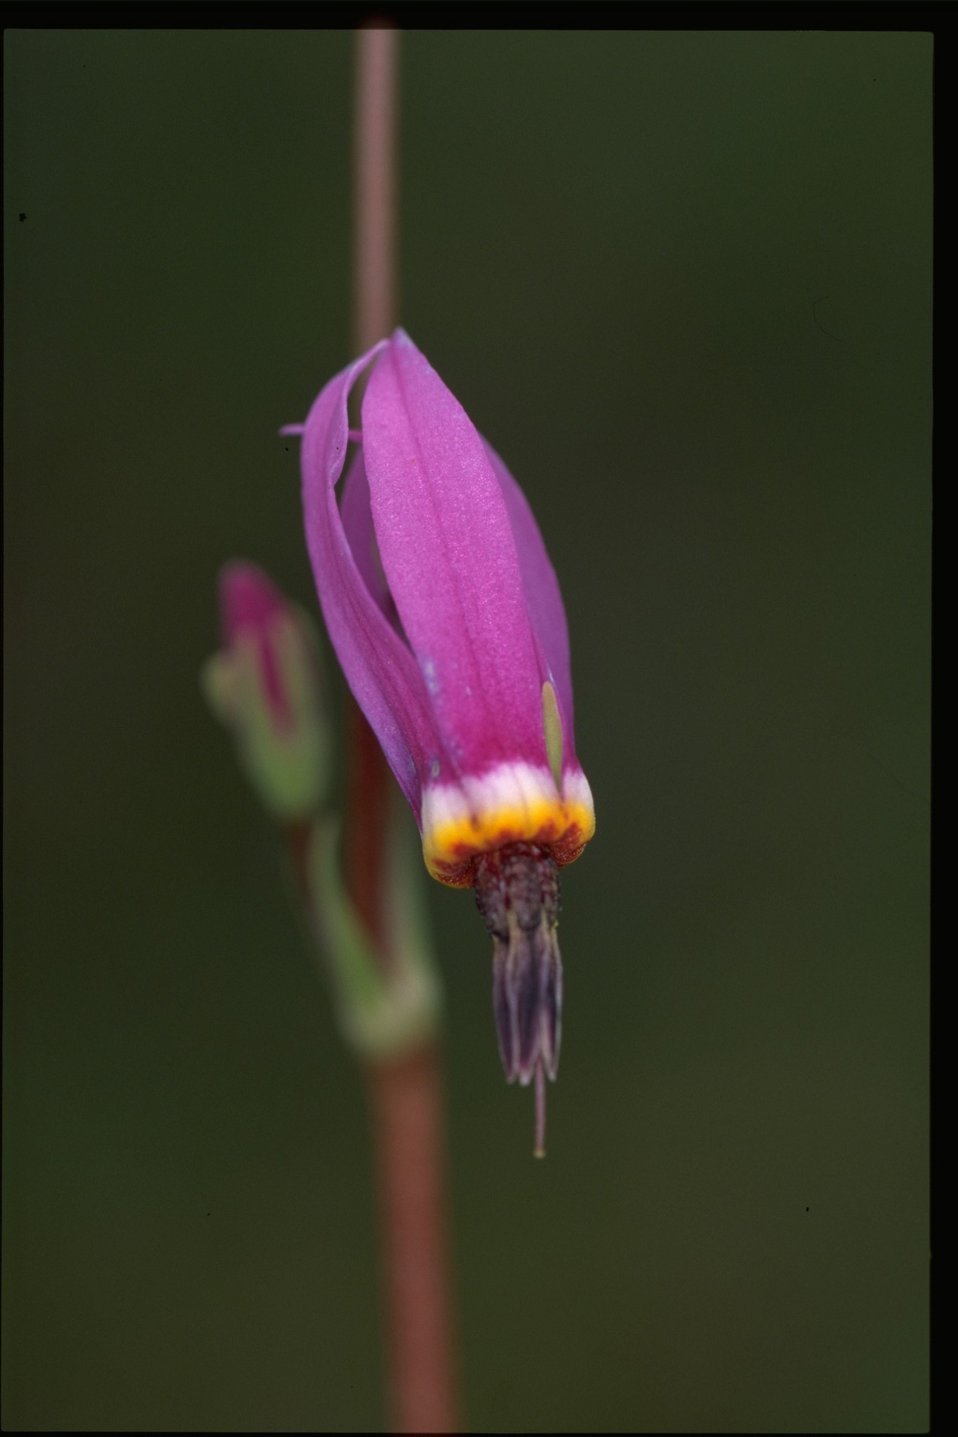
Closeup shot of Doedcatheon.